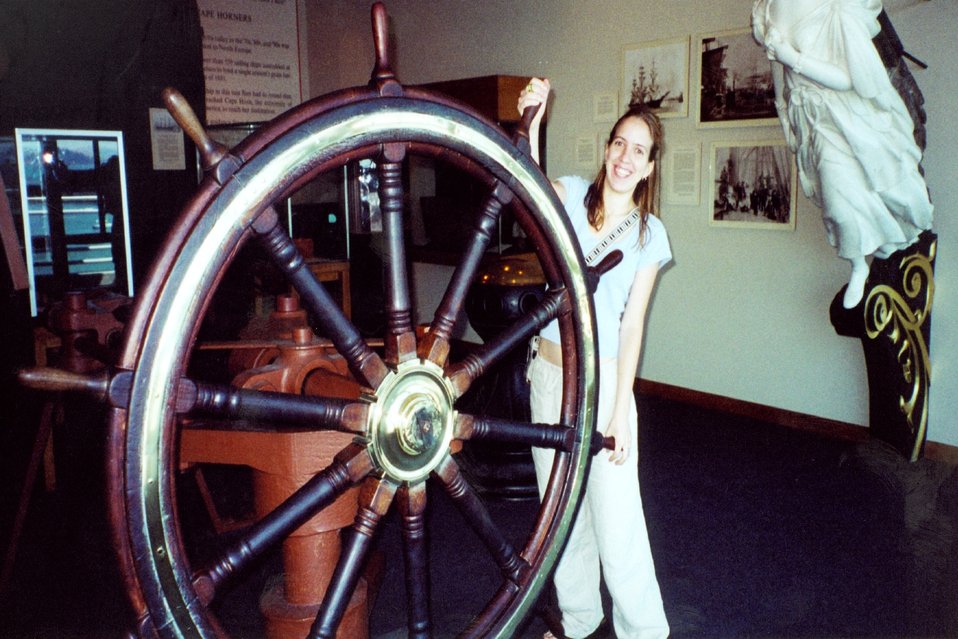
Holding true to the course at the San Francisco Maritime Museum.